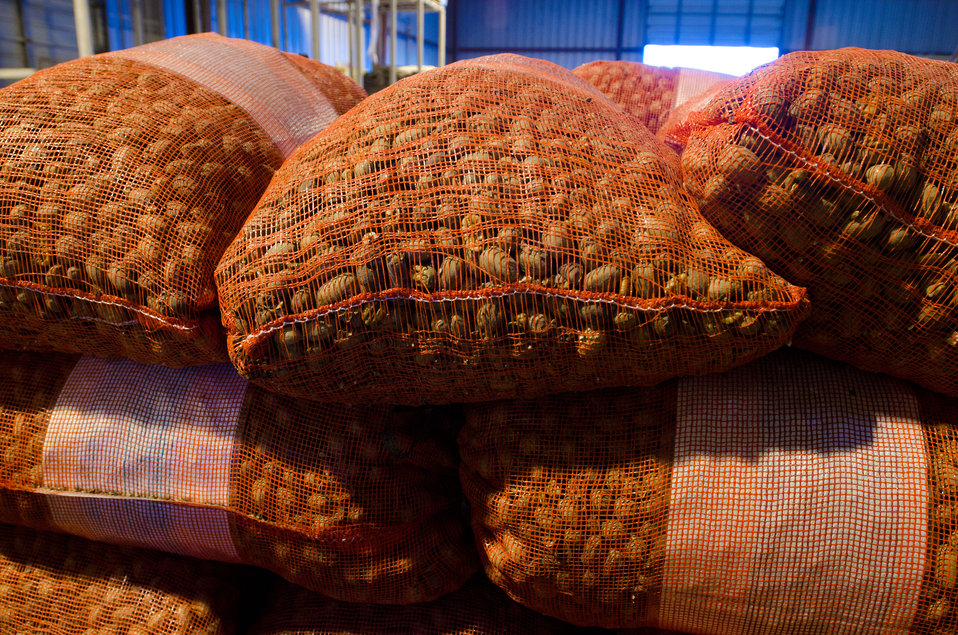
Five and 50 pound bags of pecans produced at Arrowhead Farms of Crystal City, TX, on Friday, December 9, 2011, owned by Mr. Akram Mohammad, a pecan farmer since 2005. The 719 acre farm with 10,000 trees, features some orchards with underground micro irrigation system that feeds water to the roots of 4,380 pecan trees on 146 acres. Mr. Mohammad said, “USDA (U.S. Department of Agriculture) was essential to my business and trees surviving the recent exceptional drought. The trees were stress free thanks to underground micro-irrigation. This is essential to the future growth of Texas agriculture and good for America.” U.S. Department of Agriculture’s (USDA) Environmental Quality Initiative Program (EQIP) awarded Mr. Mohammad a $130,000 grant in 2008. He provided $26,000 for the balance of the $156,000 total cost to install a 146-acre underground micro-irrigation for 4,380 trees.